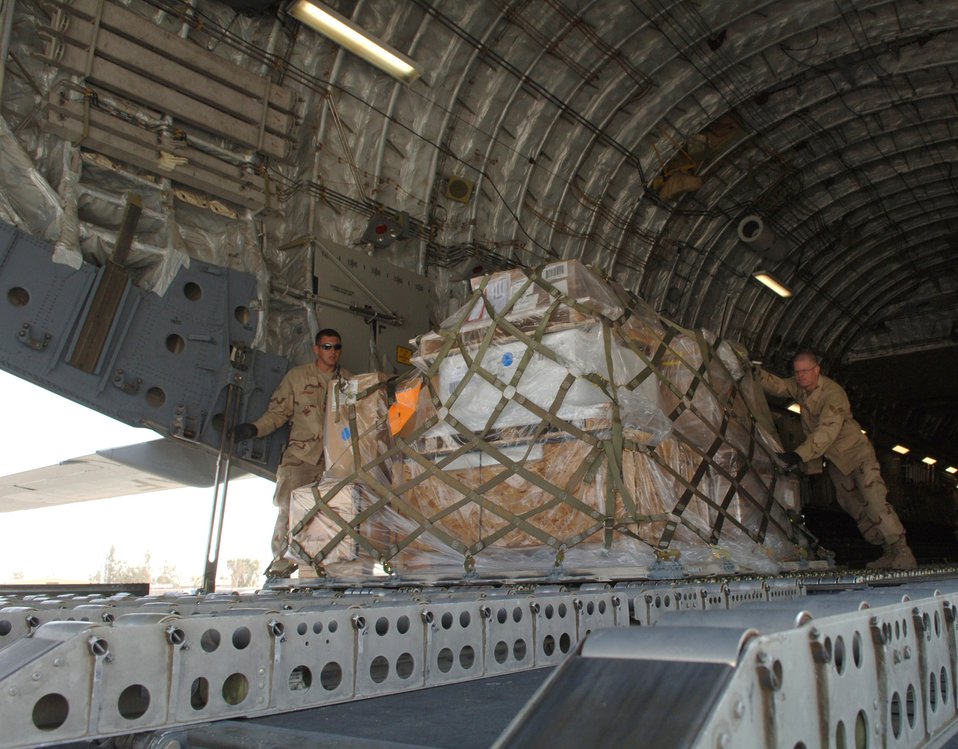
Balad's busy aerial port supports, supplies the fight

Airmen with the 332nd Expeditionary Logistics Readiness Squadron Aerial Port Flight push pallets off a C-17 Globemaster III March 14 at Balad Air Base in Iraq. Balad AB is the aerial port hub for all of Iraq and the busiest cargo aerial port in the Department of Defense.